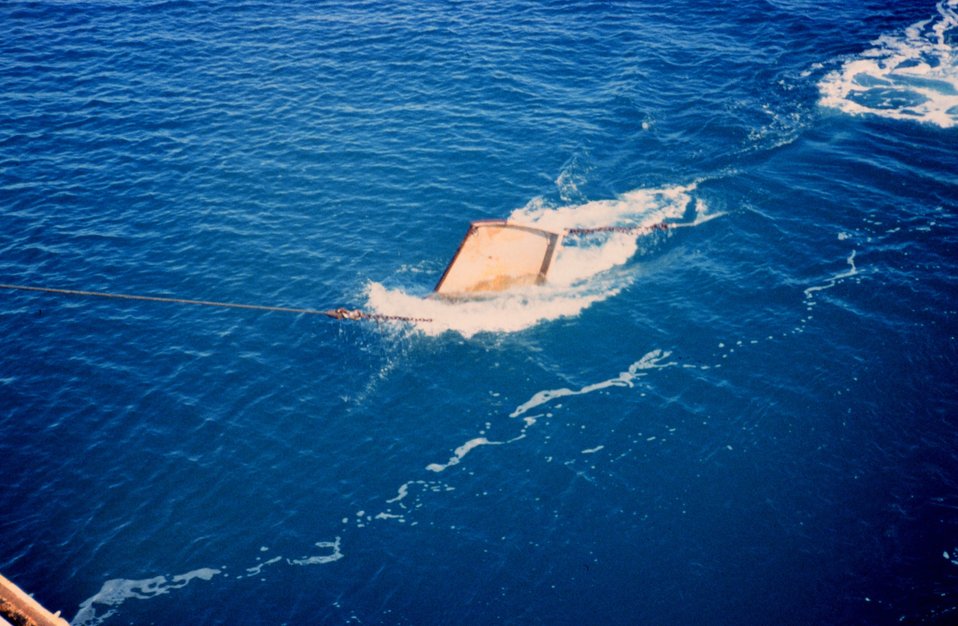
Photo # 7 - 'Shooting the doors'. The 'doors' help pull the net down and also spread open the mouth of the net.